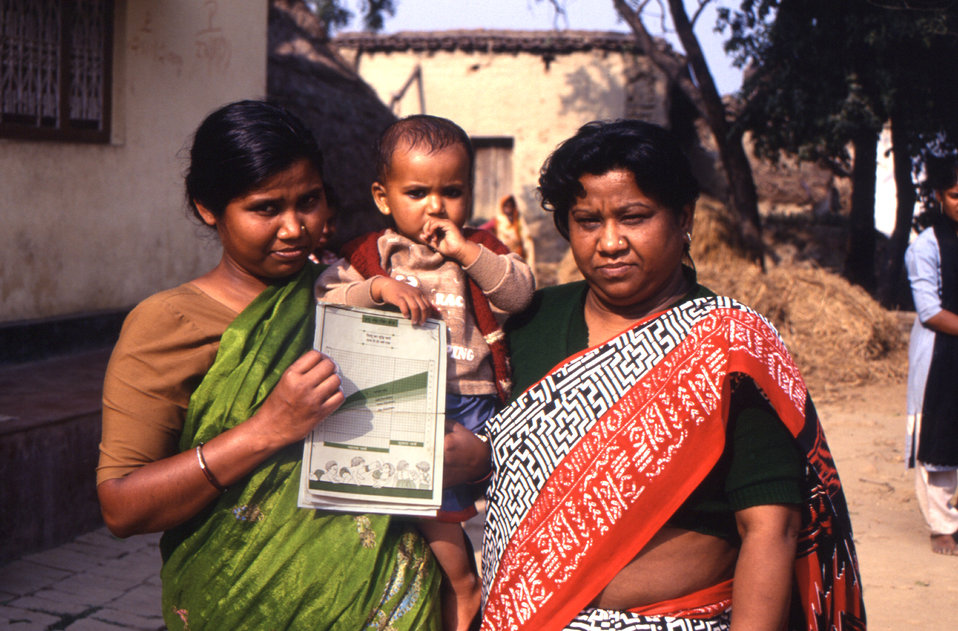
This 2000 photograph depicted a mother holding her child, while displaying a polio vaccination record that indicated the child having been properly vaccinated. She and her child were being visited by the health care practitioner at right, who'd make the rounds from house to house, in order to conduct interviews, thereby finding out which children had, or had not been properly vaccinated. This image was provided by Chris Zahniser, B.S.N., R.N., M.P.H., a STOP Transmission of Polio (STOP) immunization initiative team member and photographer. Ms. Zahniser was at the time assigned to the state of Uttar Pradesh in northern India, and spent three months working in the Districts of Gorakhpur and Deoria.